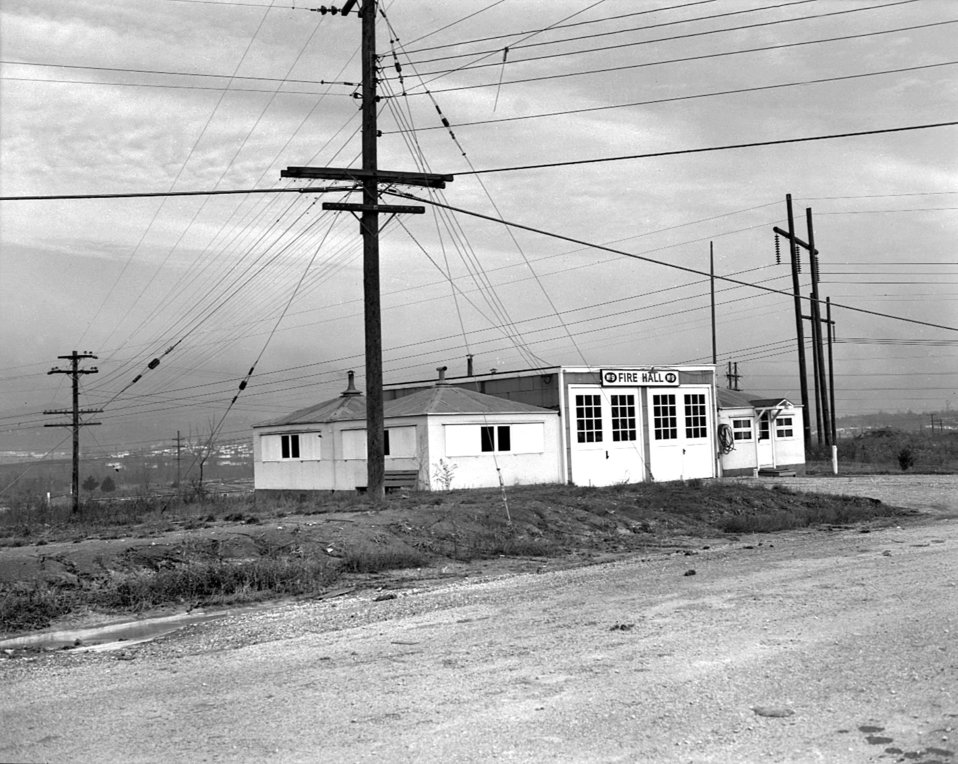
Fire Hall Gamble Valley Oak Ridge

004111 DOE photo by Ed Westcott

Fire Hall Gamble Valley Oak Ridge Tennessee 12/17/1947